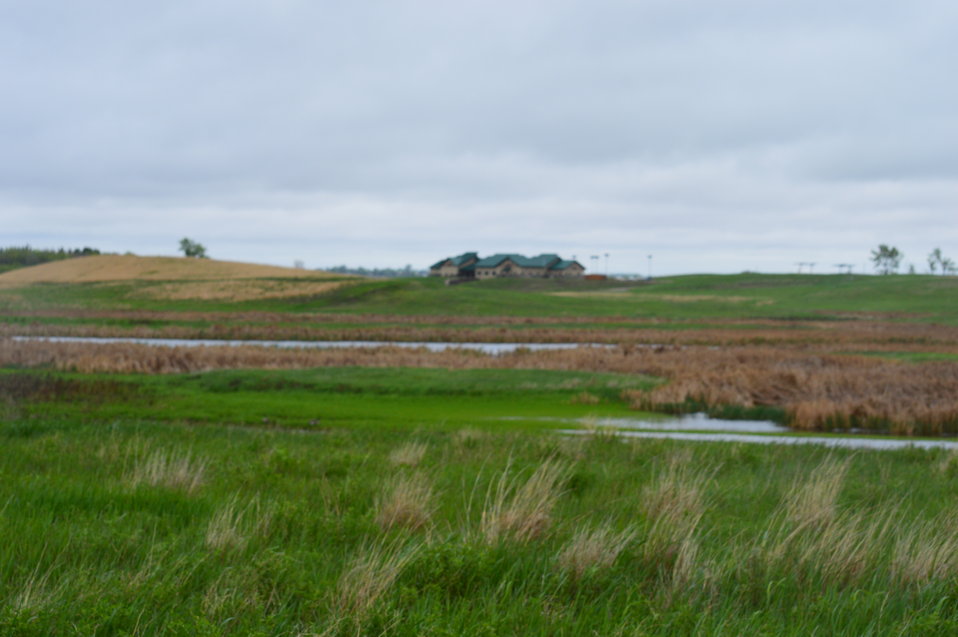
Audubon NWR

Scenery and wildlife and Audubon National Wildlife Refuge in North Dakota.